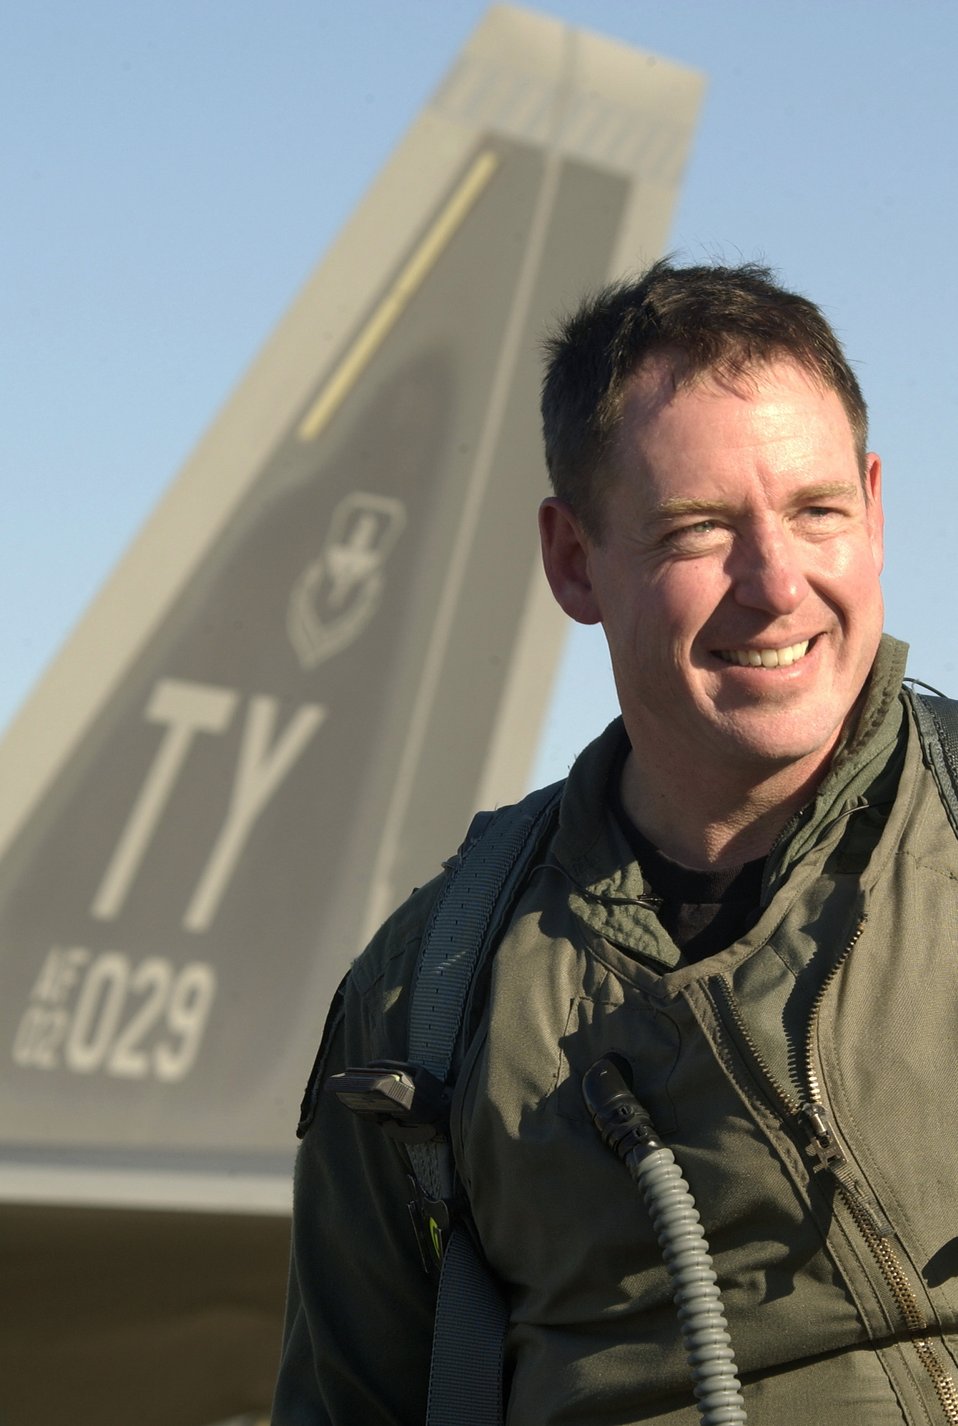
Raptor commander

LANGLEY AIR FORCE BASE, Va. -- Lt. Col. James Hecker, selected to command the first active F/A-22 Squadron, stands in front of the Raptor that he flew from Tyndall Air Force Base, Fla., to here Jan. 18. The aircraft will be the first combat ready F/A-22 Raptor used for mission sorties. Lt. Col. Hecker is the 27th Fighter Squadron commander.